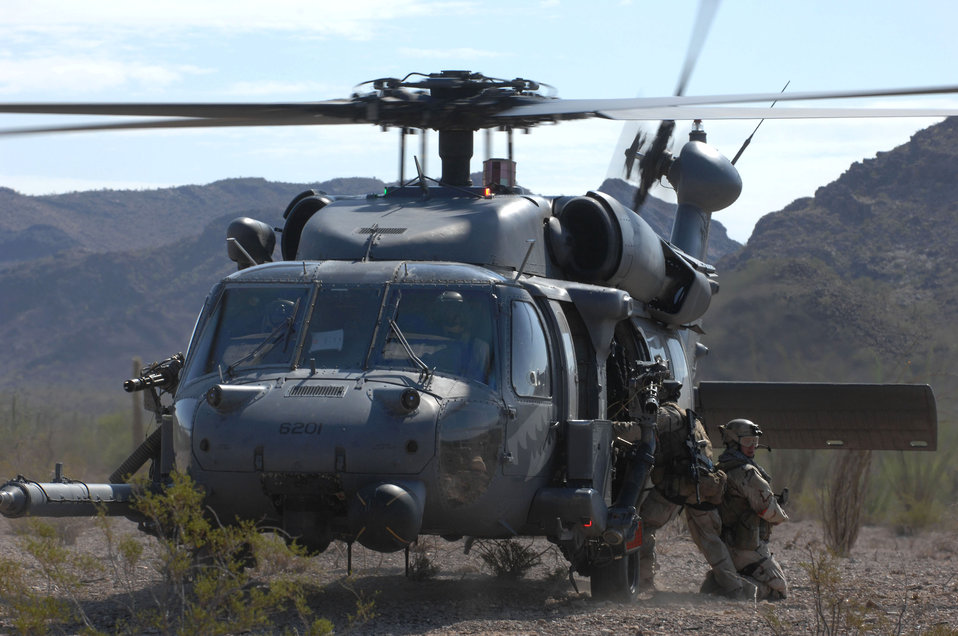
Angels bring thunder

Staff Sgt. David Glass covers his teammate as he climbs on an 55th RQS HH-60 Pave Hawk during evacuation procedures during Exercise Angel Thunder July 16 at Gila Bend, Ariz. Sergeant Glass is a 48th Rescue Squadron pararesueman from Davis-Monthan Air Force Base, Ariz. The exercise is designed to provide realistic combat search and rescue training for Airmen in combat rescue forces.